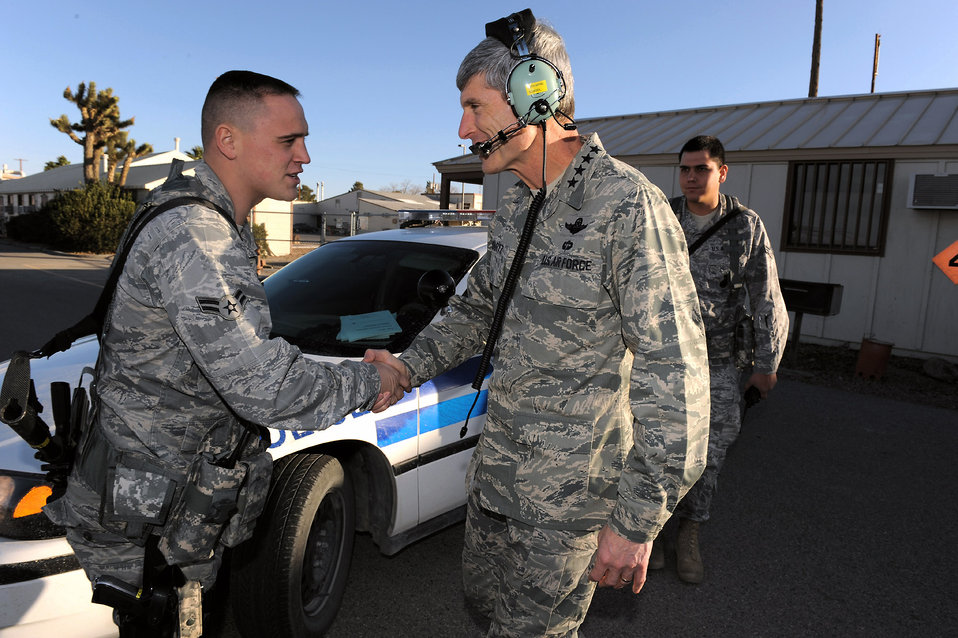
CSAF sees full spectrum of fly, fight, win

Gen. Norton Schwartz, Air Force Chief of Staff, meets with Airman 1st Class Michael Garlich prior to his departure from Creech Air Force Base, Nev., Dec. 13. This was General Schwartz's first visit to the base since becoming the 19th Air Force Chief of Staff. Airman Garlich is a 99th Security Forces OL-A patrolman.